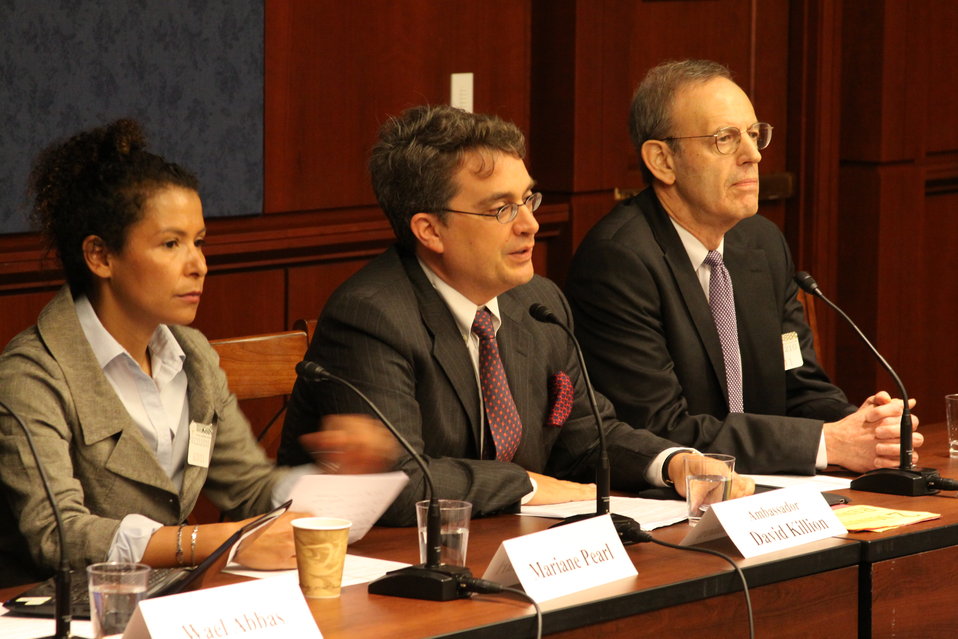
Ambassador Killion and Panel Participants Respond to Questions

Participants in the “Defending Press Freedom in the 21st Century” panel, including Mariane Pearl, journalist and widow of slain Journalist Daniel Pearl, left; Ambassador David Killion, U.S. Permanent Representative to UNESCO, center; and Carl Gershman, President of the National Endowment for Democracy, right; respond to questions at the U.S. Capitol in Washington, D.C., on May 3, 2011.